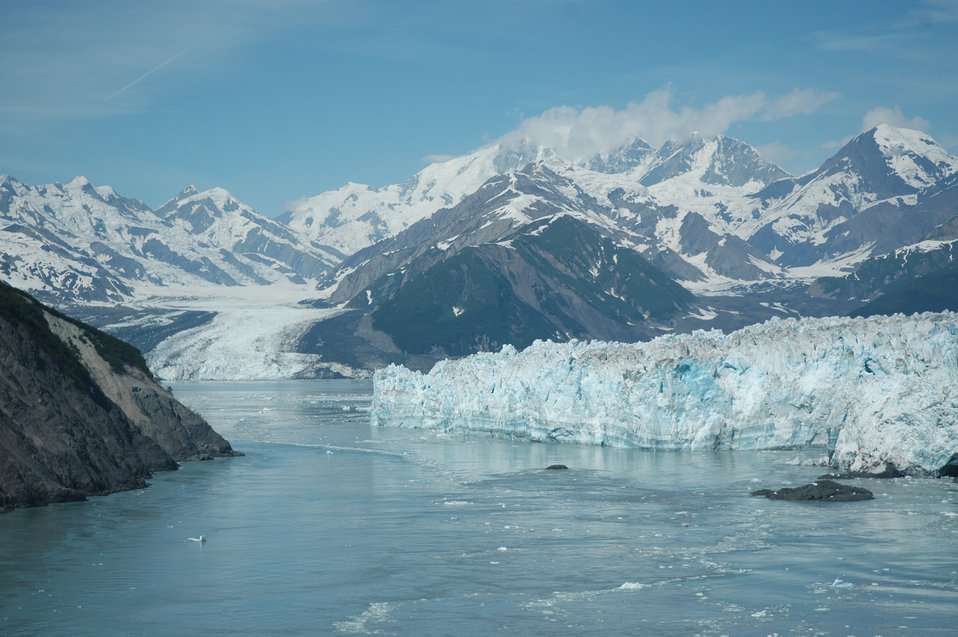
Hubbard Glacier is the largest tidewater glacier on the North American continent . In contrast to most glaciers it has been advancing since first mapped in 1895 . If it's advance continues, it will close off Russell Fjord and make the largest glacier-dammed lake in North America in historic times.